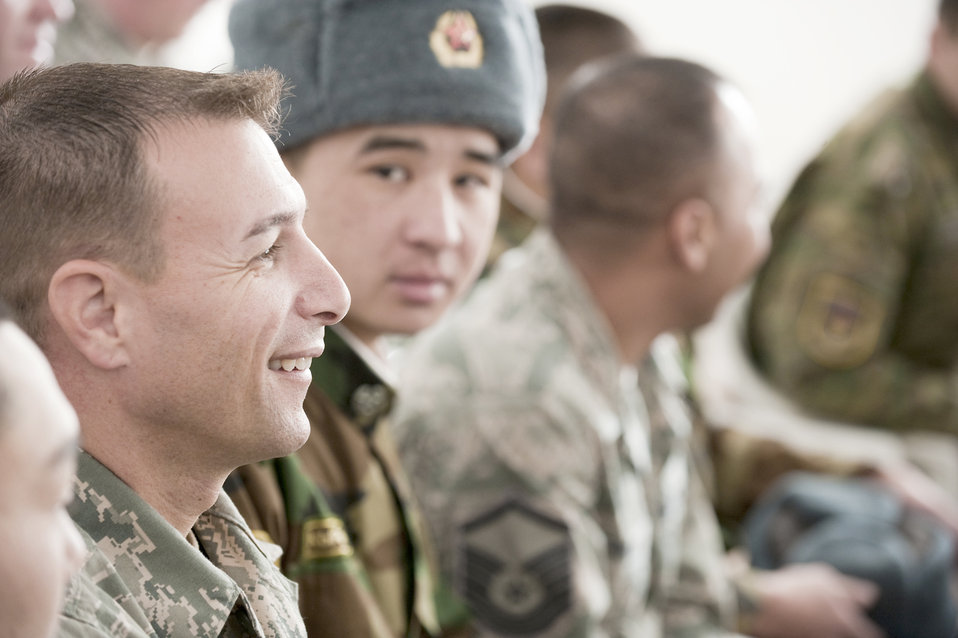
Kyrgyz, U.S. servicemembers distribute coats to Koi-Tash students

Master Sgt. John Lamp sits with other U.S. and Kyrgyz servicemembers during a cultural concert by students at the Chuiskaya Region Boarding School-Gymnasium Nov. 11, 2010, in Koi Tash, Kyrgyzstan. The two militaries gave students coats, blankets and hats as part of Operation Warm and Dry II. Sergeant Lamp is a first sergeant at the Transit Center at Manas.